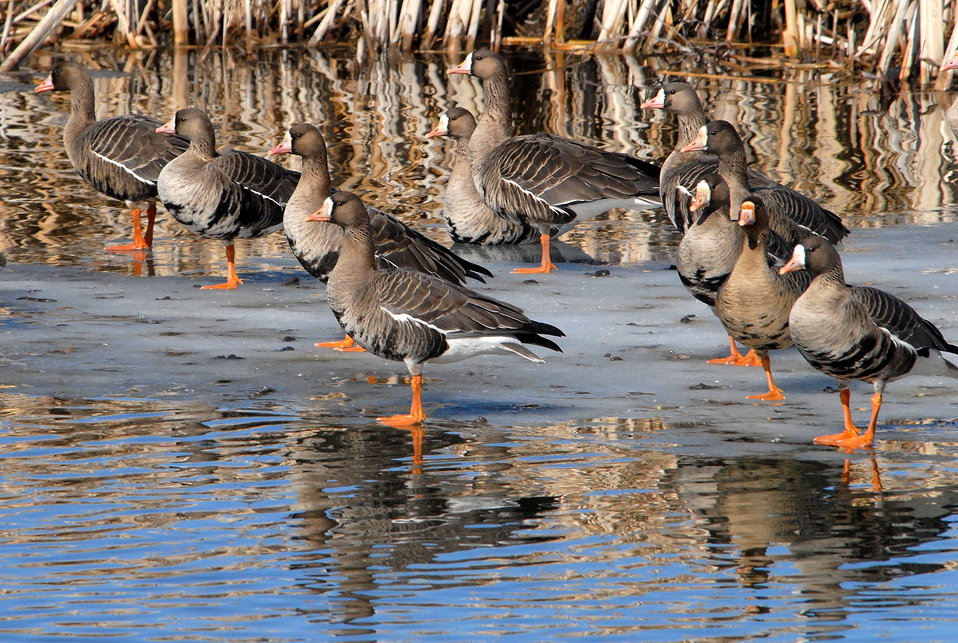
White-fronted Geese